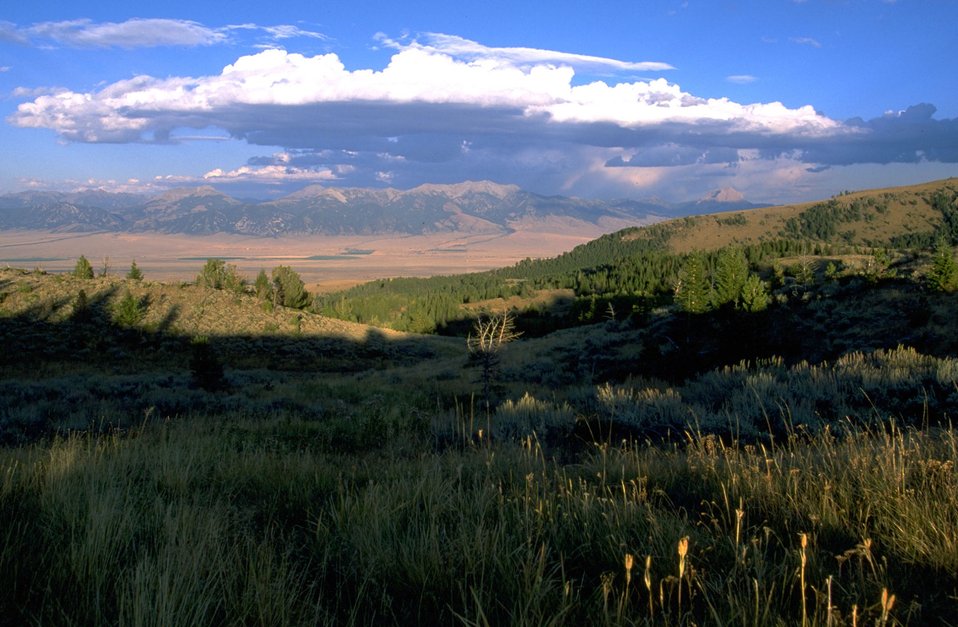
Grassy hills surrounding a valley